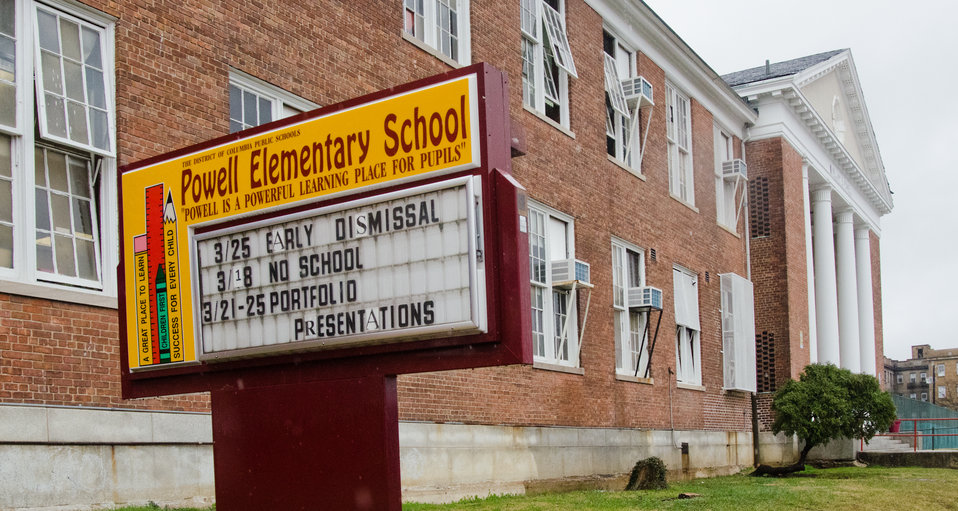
W. B. Powell Elementary School hosted The People’s Garden team consisting of the Washington Capitols, U.S. Department of Agriculture and D.C. Public Schools in Washington, D.C., who will reveal the School Garden Design Concept on Thursday, March 10, 2011.